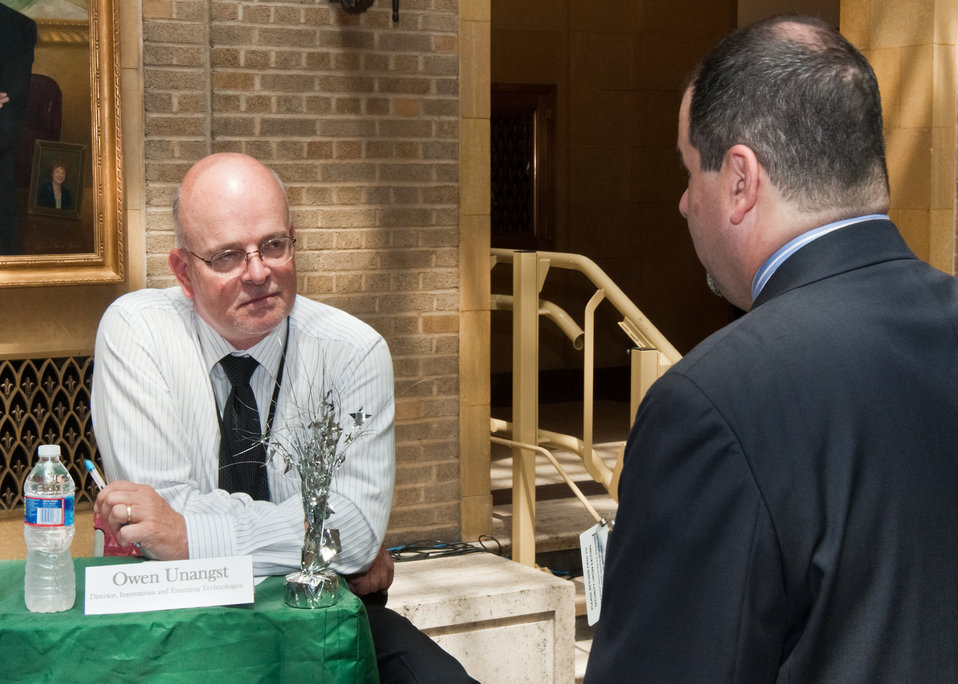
Owen Unangst, Director, Innovations and Emerging Technologies, Office of the Chief Information Officer and Josh Sawislak, Senior Fellow Telework Exchange discuss the benefits of the telework agreement for employees during a “Telework Program Party/Brown Bag” event on the patio of the Jamie Whitten Building of United States Department of Agriculture, in Washington, DC, on Tuesday, June 7, 2011. The event included an interactive telework panel and exhibits from the field of telework, telecommuting and mobile work environments. The event was open to all USDA employees, supervisors, managers, human resources staff and USDA telework program coordinators.